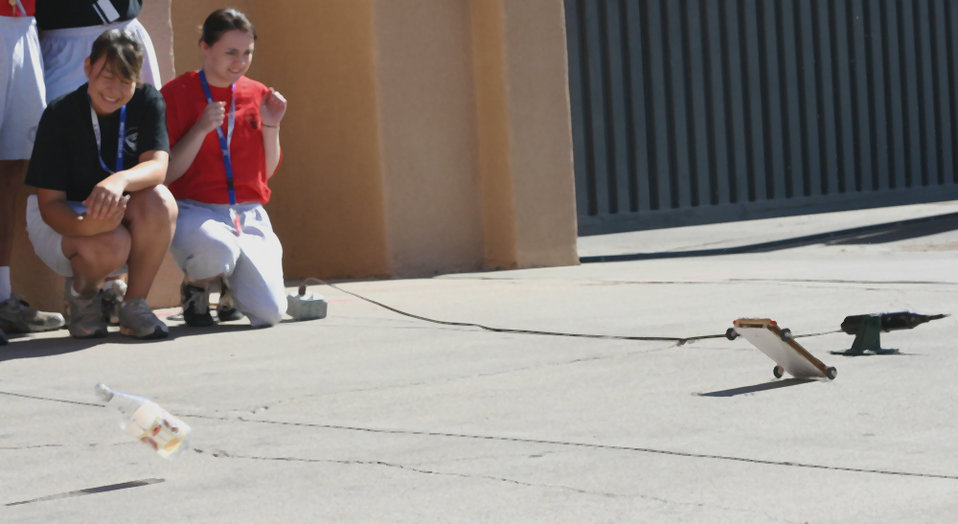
Top Junior ROTC cadets explore AF opportunities

Air Force Junior ROTC Cadets Alexa Solorio from Arizona and Amber Muston from Utah wince as their rocket car bottle explodes off the frame July 29 during preliminary tests for the rocket car contest at Albuquerque, N.M. The cadets were participating in 2008 Air Force Junior ROTC Aerospace and Technology Honor Camp